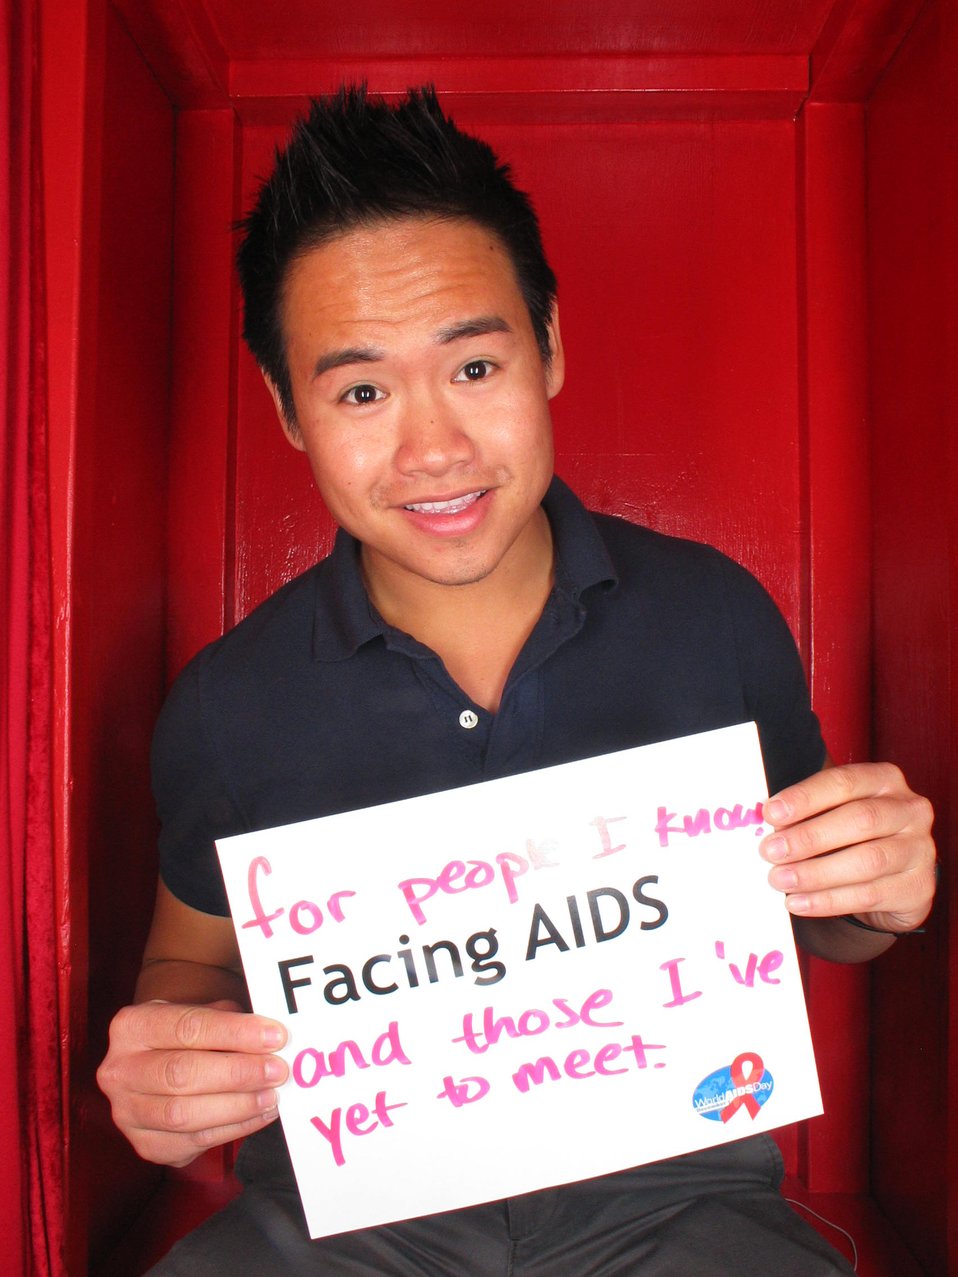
for the peple I know Facing AIDS those I've yet to meet.